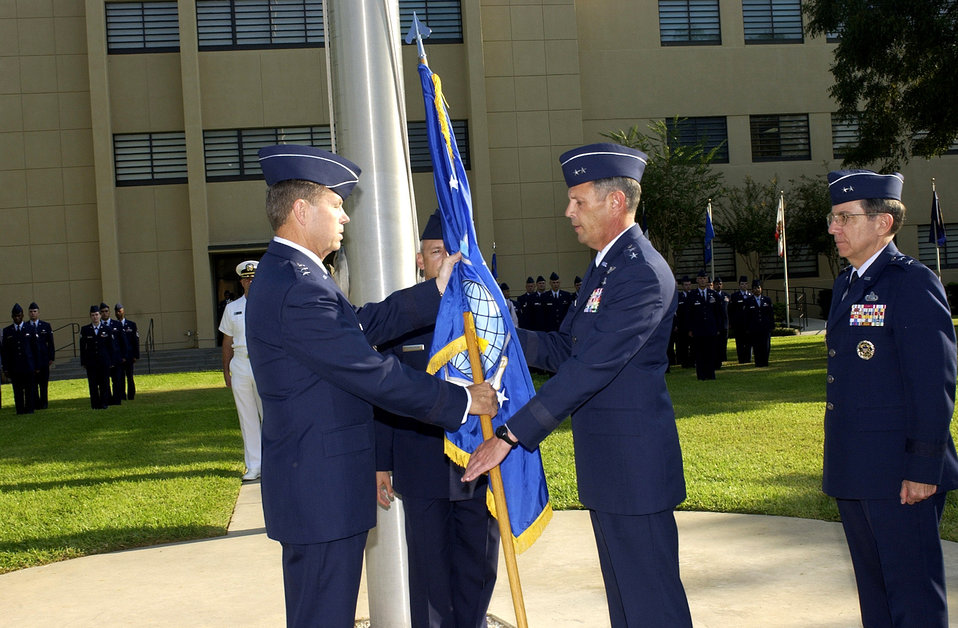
Intel officer assumes command of Air Intelligence Agency

LACKLAND AIR FORCE BASE, Texas -- Maj. Gen. John C. Koziol (second from right) receives the Air Intelligence Agency guidon from Lt. Gen. William M. Fraser III, vice commander of Air Combat Command, while Maj. Gen. Paul J. Lebras (right) and Chief Master Sgt. Edward Colquhoun Jr., AIA command chief master sergeant (center rear) observes.